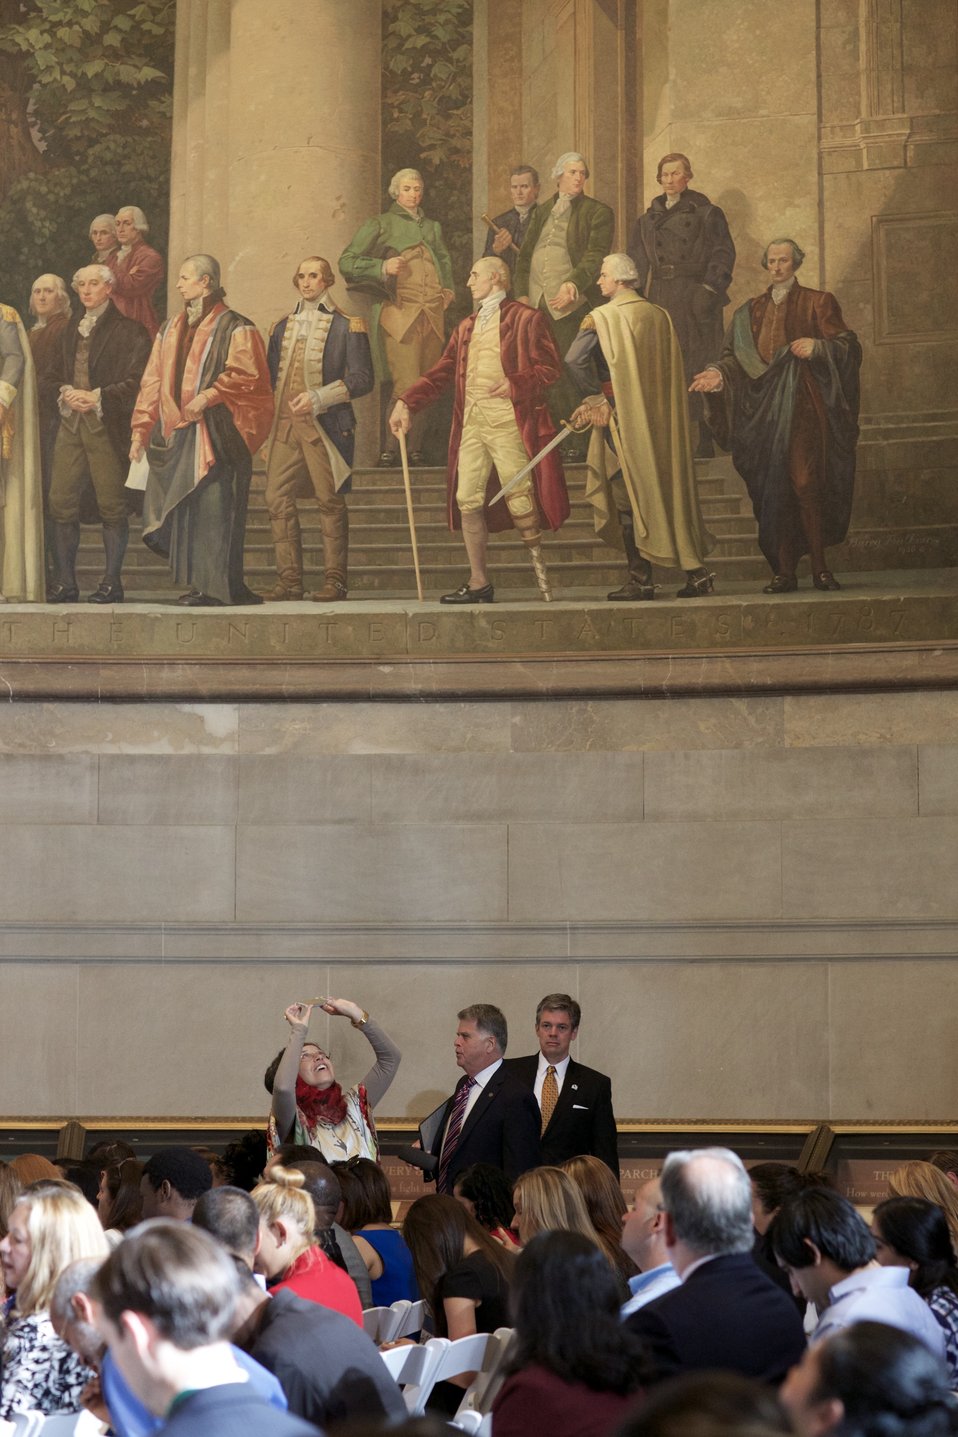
Naturalization Ceremony with Michelle Obama